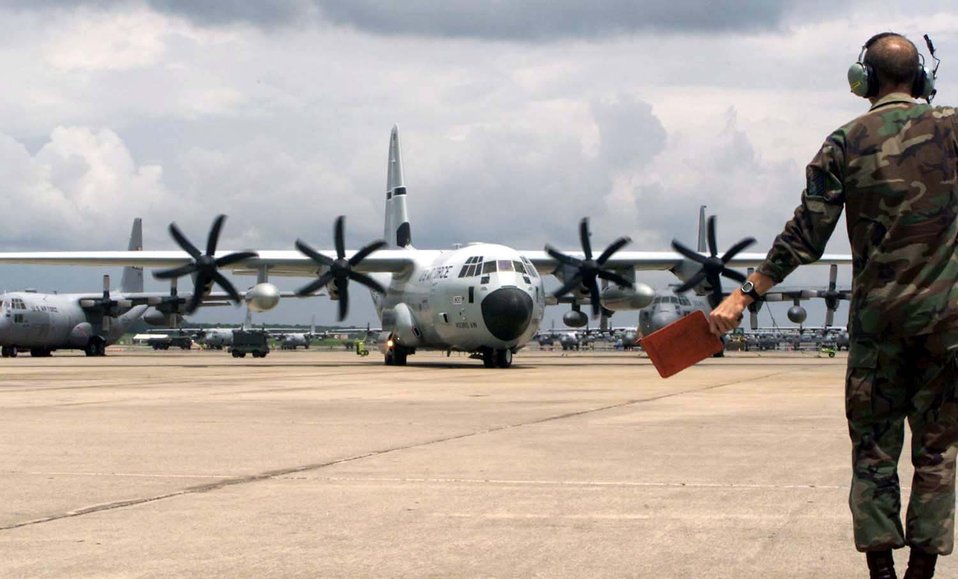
Newest C-130 model

LITTLE ROCK AIR FORCE BASE, Ark. -- Tech. Sgt. Steven Knoll guides a C-130J Hercules here. The aircraft is being used to train active-duty aircrews on this newest version of the C-130.